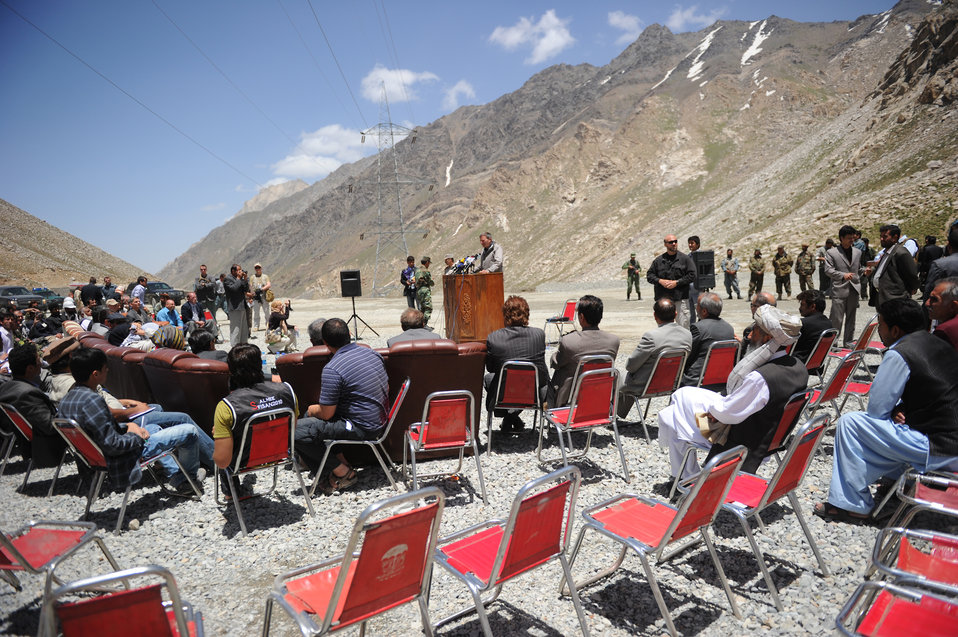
U.S. Ambassador Karl W. Eikenberry makes remarks during a ceremony to mark the beginning of renovations at the Salang Tunnel on the border of Parwan and Baghlan Provinces, Afghanistan, on Wednesday, June 15, 2011. (S.K.Vemmer/Department of State)